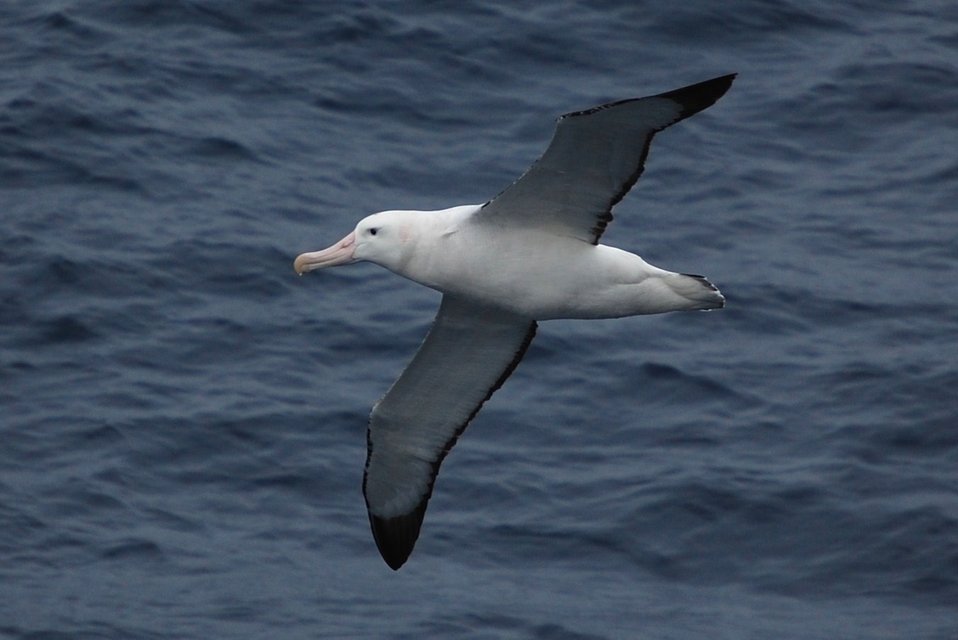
Wandering albatross.